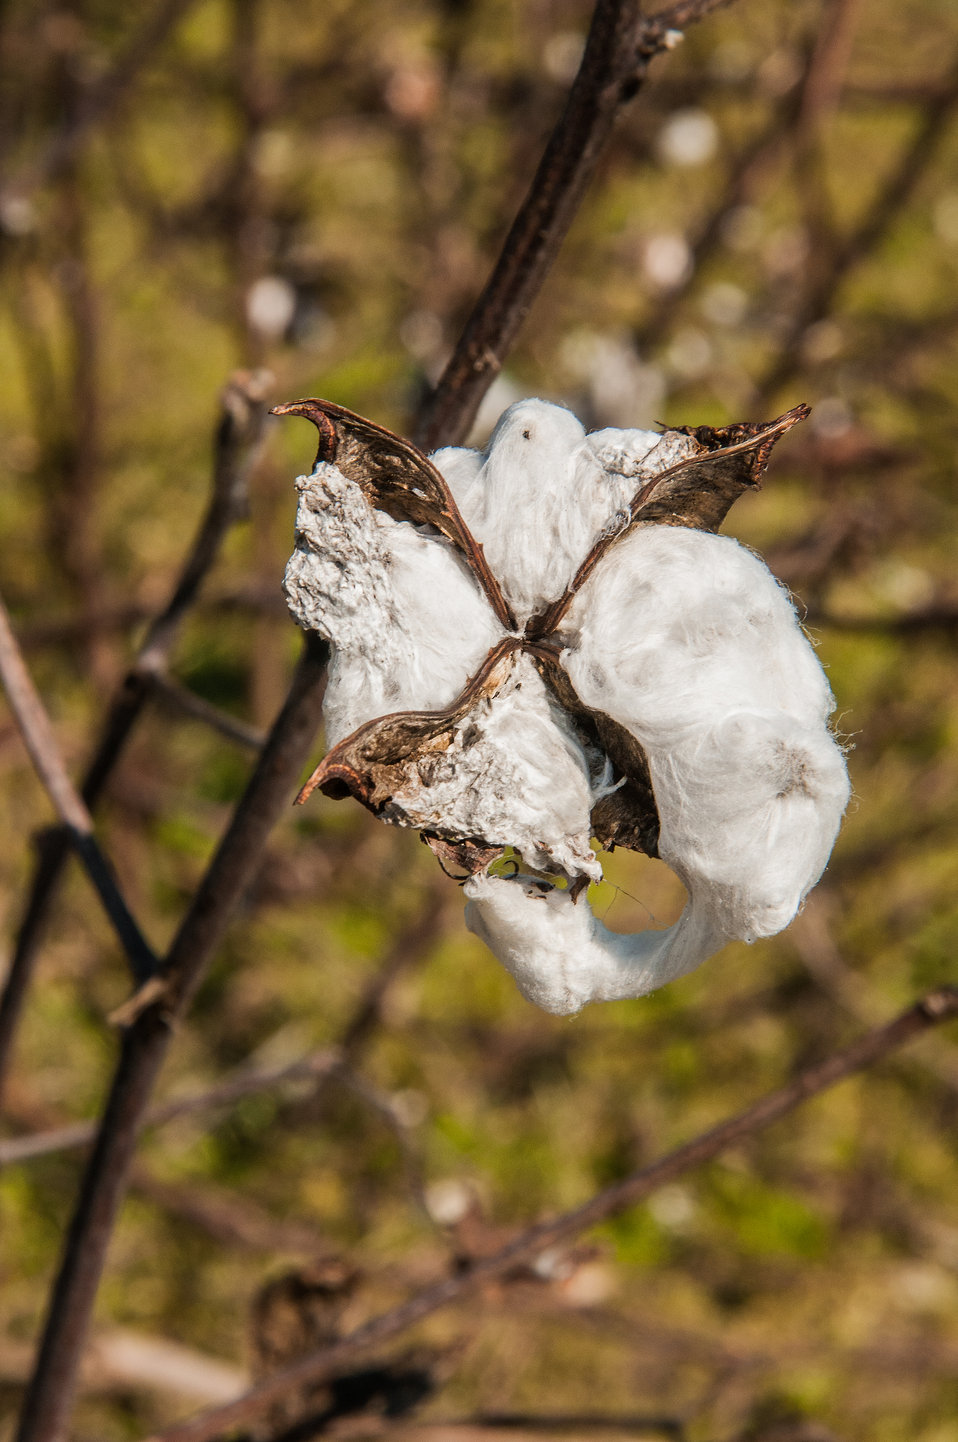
Georgia cotton grows in Dooly County, GA on Mar. 6, 2013. The cotton harvest in Georgia is normally from September through early November. Dooly County has been designated as a U.S. Department of Agriculture (USDA) Strike Force Initiative county selected to receive assistance to relieve persistent poverty in high poverty counties.